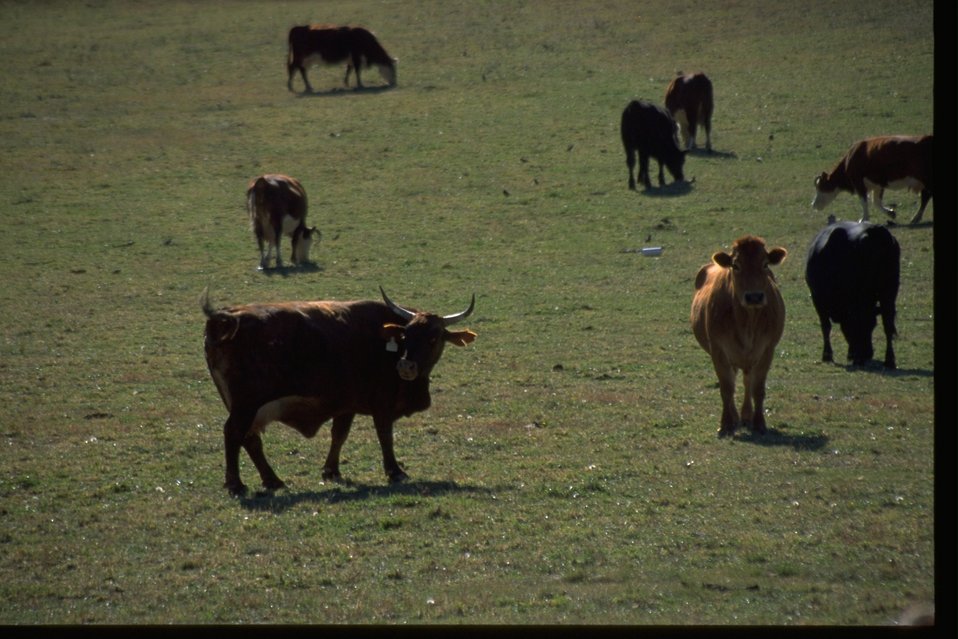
Cow in private pasture near section 2 of the John Day River.